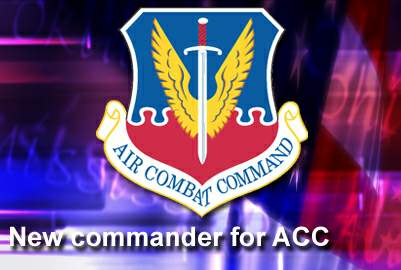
Air Combat Command welcomes new commander

Gen. William M. Fraser III assumed command of Air Combat Command from Gen. John D.W. Corley in a change-of-command ceremony here Sept. 10.